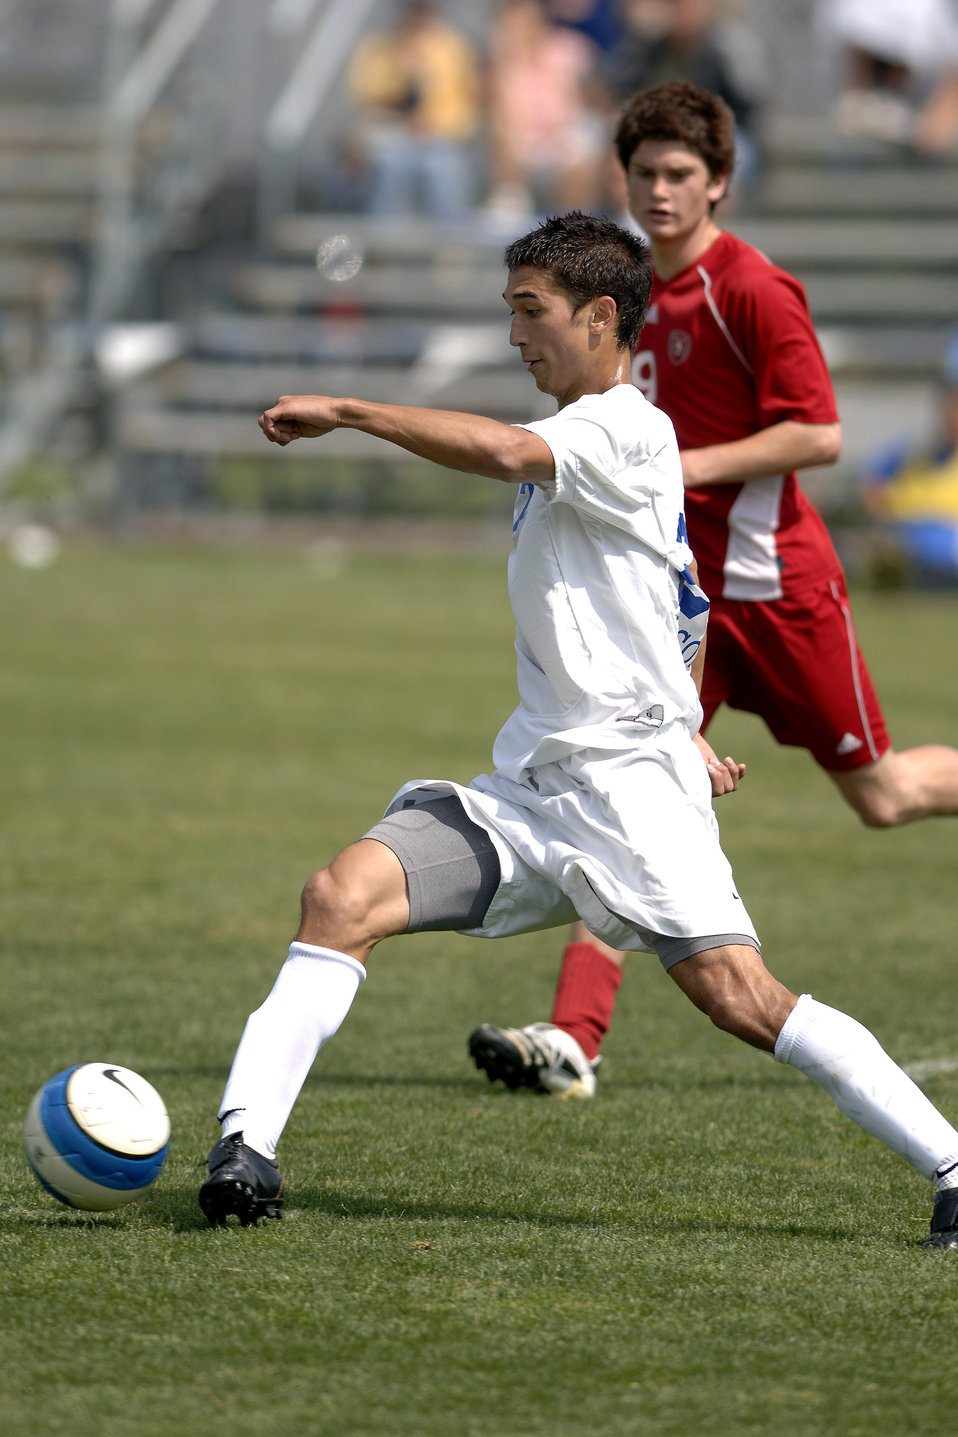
Falcons shut out St. Francis in soccer action

Senior Jason Bellville moves the ball as Air Force posts its second consecutive shutout with a 1-0 victory over St. Francis University Sept. 9 at the U.S. Air Force Academy Cadet Soccer Stadium in Colorado Springs, Colo. With the victory, Air Force improved to 2-2 this season, while St. Francis fell to 1-3.